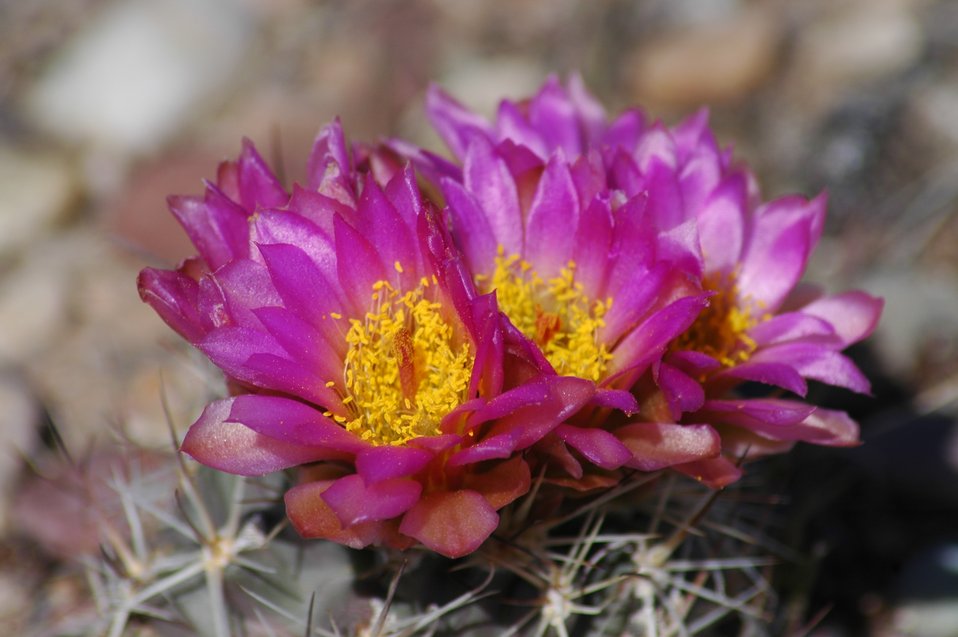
Sclerocactus in Bloom

Uinta Basin hookless cactus (Sclerocactus) in bloom on Ouray National Wildlife Refuge in Utah.